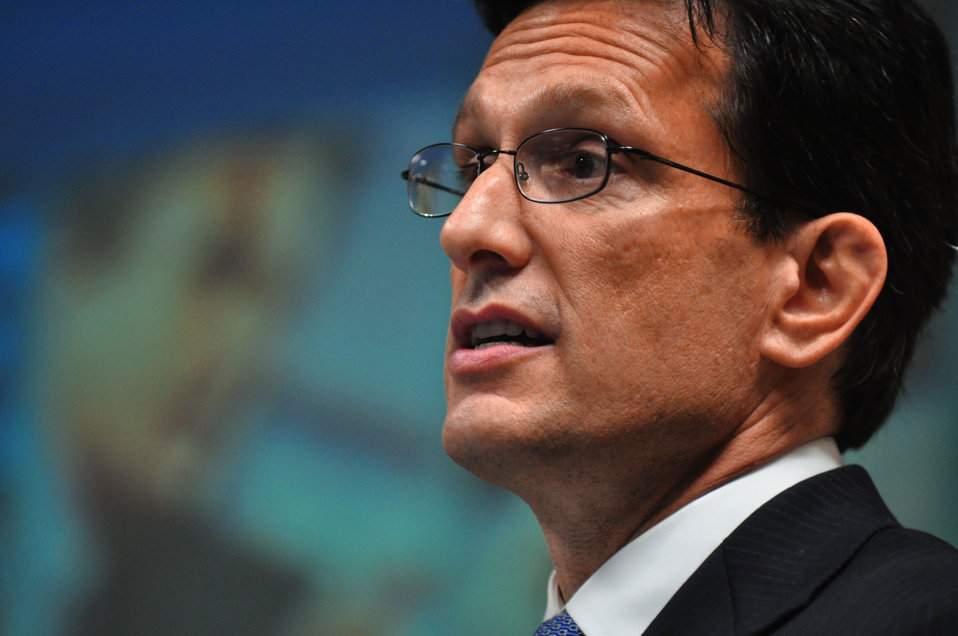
Congressman Eric Cantor Majority Leader Tennessee Valley Corridor Summit Oak Ridge

13-062 DOE photo Lynn Freeny 5-29-2013 Oak Ridge Tennessee